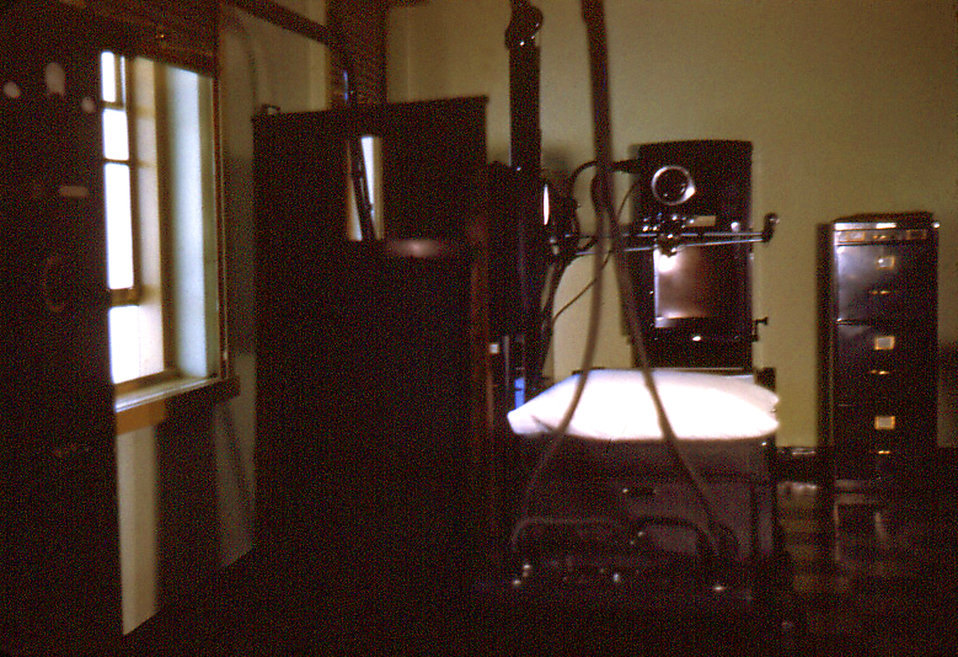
This historic image depicted what was the Carville, Louisiana Leprosarium's x-ray room. At the time of this old photograph, this room was equipped with the most modern radiographic machinery. The hospital was a self-contained compound with its own power plant, storehouse, patient treatment centers such as this radiographic center, and a dental office, food-processing facilities, i.e., a cafeteria, and its own cemetery. The National Hansen's Disease Museum's (NHDM) mission is to collect, preserve and interpret the medical and cultural artifacts of the Carville Historic District. In addition, we want to promote the understanding, identification, and treatment of Hansen's Disease (leprosy). We fulfill this mission by creating and maintaining museum displays, traveling exhibits, publications and a website in order to educate and inform the public on all levels.